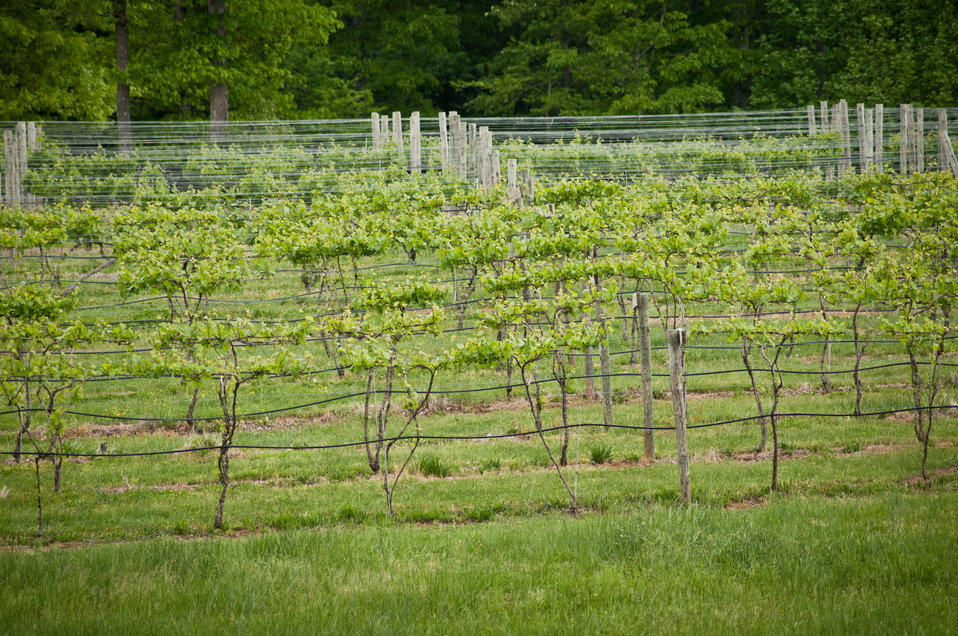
Cooper Vineyards in Louisa, VA, is the first winery on the East Coast and the second in the country to be awarded the fourth and highest, Platinum certification by Leadership in Energy and Environmental Design (LEED).
From a Virginia Wine Board Marketing Office press release, “The process of building a LEED platinum certified building was initially more expensive and arduous than co-owners, Jacque Hogge, MD and Geoffrey Cooper, MD expected, but they were able to get financial assistance from the United States Department of Agriculture. “Know that there are grants available to help with the costs of sustainable building projects,” Hogge advises to other potential green wineries. Cooper Vineyards received 2 of the 3 USDA (U.S. Department of Agriculture Rural Development (RD) Rural Energy Financing program) grants awarded in Virginia in 2010 to help with the expenses of their construction.”
Rural Energy Financing program focuses on loan guarantees, loans and grants to agricultural producers, businesses, cooperatives and rural residents for renewable energy systems and to make energy efficiency improvements.
The tasting room and building collects rainwater from the roof; uses low flow water fixtures to reduce usage by 40%; utilizes structurally insulated panels for the roof and walls; heats and cools the entire building using a geothermal system that includes pipes that are embedded in the parking lot; low-voltage LED lighting with daylight and occupancy sensors provide ample light when it is needed; a solar panel array provides more than 15% of the energy needs for the building, and much of the construction materials are from local and recycled material sources. For more information about USDA please go to www.usda.gov, Rural Development and Rural Energy Financing. LEED was developed by the U.S. Green Building Council (USGBC) is a 501 c3 non-profit organization committed to a prosperous and sustainable future for our nation through cost-efficient and energy-saving green buildings.